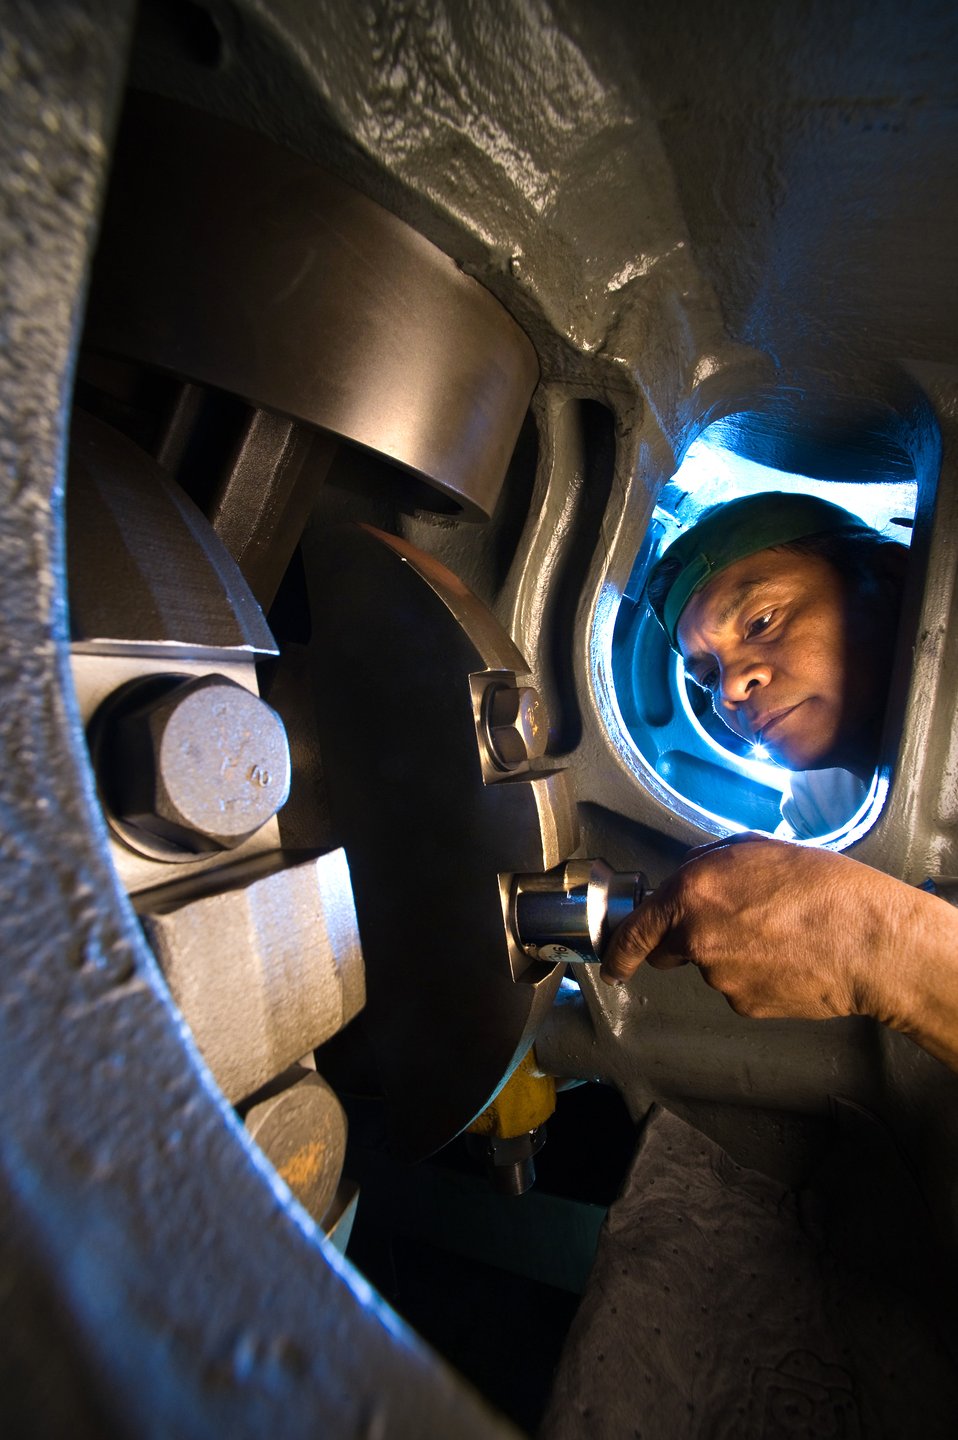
Deep in the engine

Damien Cuello works on a turbocharged diesel engine at the power production facility of the 45th Operations Group, Detachment 2, at Ascension Auxiliary Airfield, Ascension Island. The engine drives a generator that supplies power to the electrical grid for the airfield and facilities, including a nearby Royal Air Force airfield. Mr. Cuello is a contract associate in charge of maintenance for six wind turbines and five diesel generators.